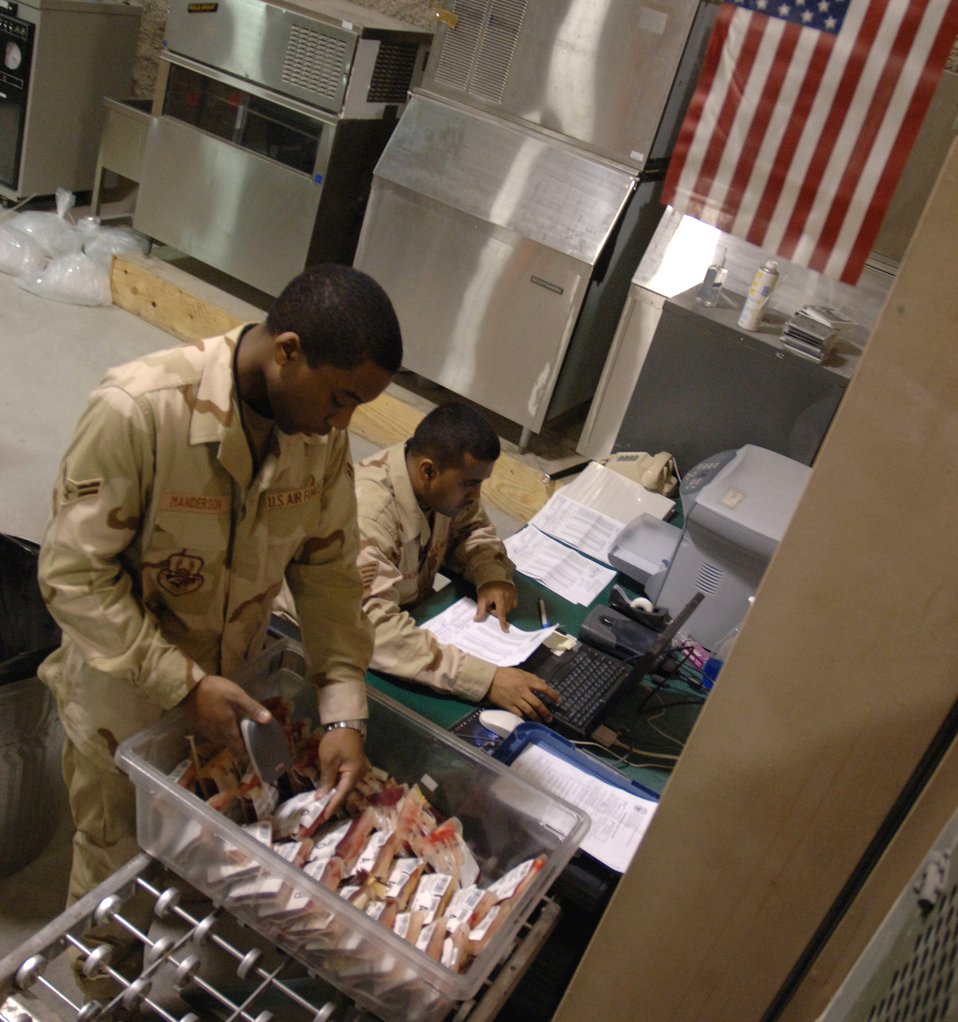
Blood samples

SOUTHWEST ASIA (AFPN) -- Airman 1st Class Roaquiem Manderson (left) and Staff Sgt. Ronell Ramcharitar unload blood samples at the blood transshipment center here Jan. 28. The center gets blood from the United States and sends it throughout the region. Both Airmen are with the 379th Expeditionary Medical Support Flight and deployed from Langley Air Force Base, Va.